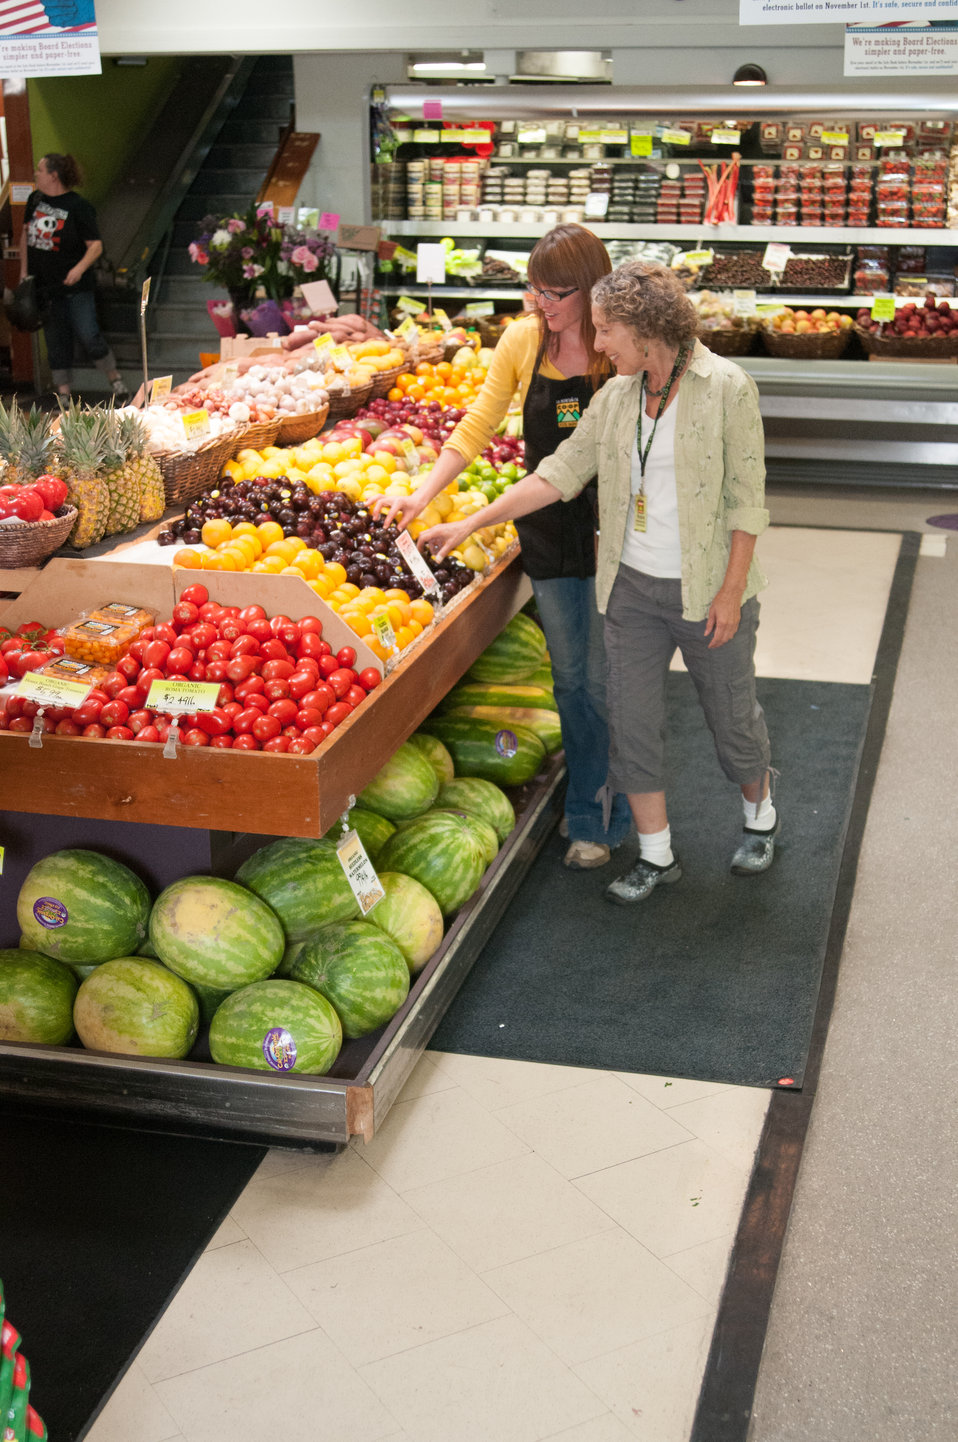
Produce Manager Amanda Dobron and Membership and Community Development Coordinator Robin Seydel check the fresh produce at the La Montanita Co-op Valley Store in Albuquerque, NM on Monday, Jun. 10, 2013. La Montanita Co-op is a 17,000 member socially responsible, locally owned food cooperative that supports a stable market for local farmers and producers of sustainable and organic regional/local agriculture in Albuquerque, NM. The co-op has a distribution center and two stores in Albuquerque; Valley and Nob Hill and stores in Santa Fe and Gallup, NM.